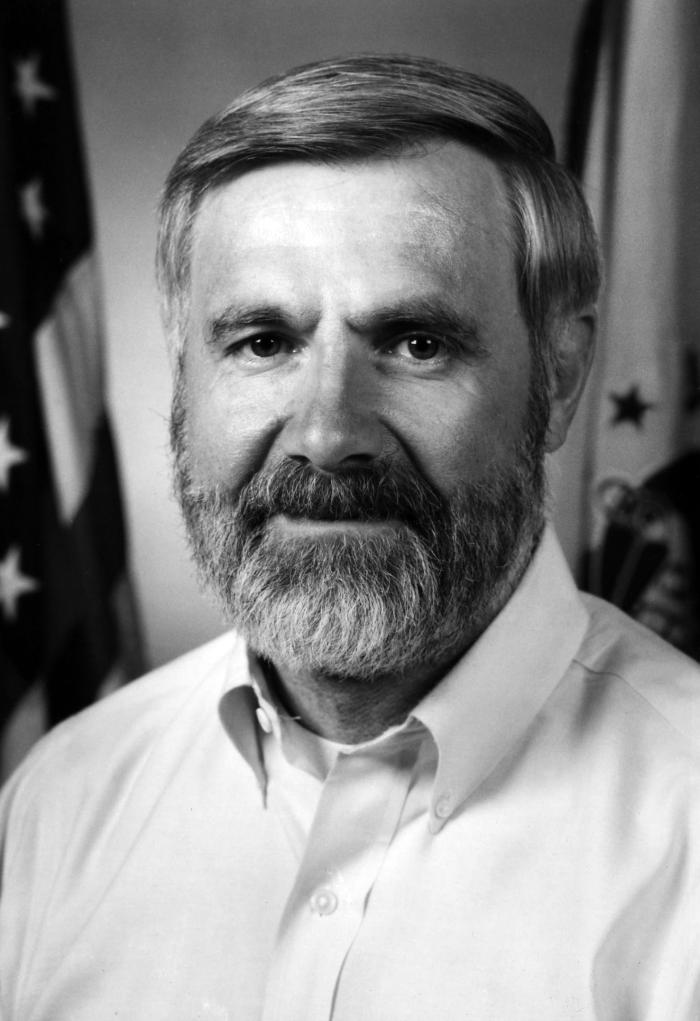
This photographic portrait showed William H. Foege, M.D., M.P.H., a former Centers for Disease Control director from 1977 - 1983. While in office, Dr. Foege worked to expand the agency's mission to include injury, violence, and chronic diseases, in addition to infectious disease monitoring and prevention.